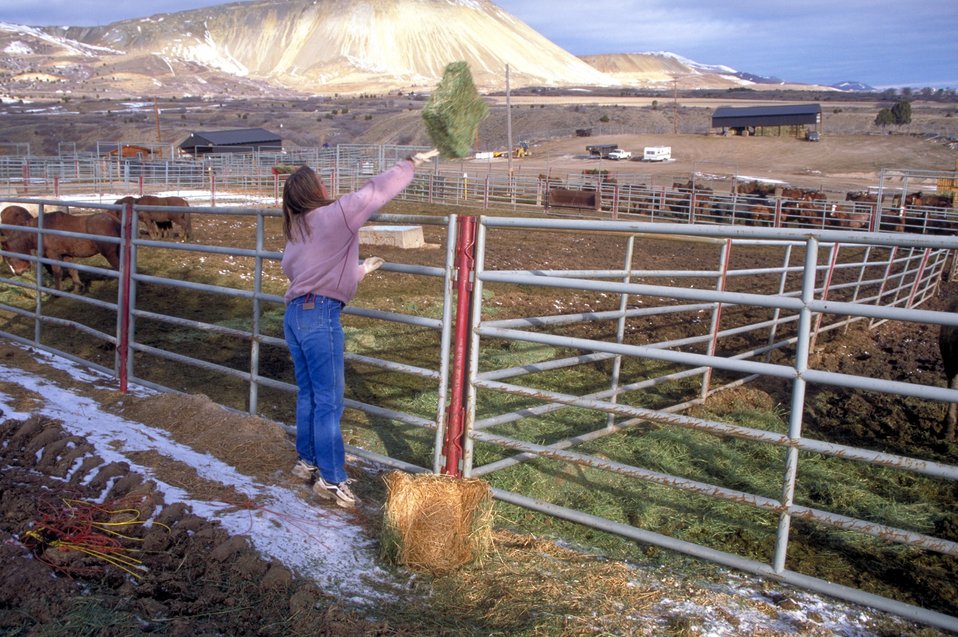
Salt Lake Regional Wild Horse and Burro Center Butterfield Canyon.